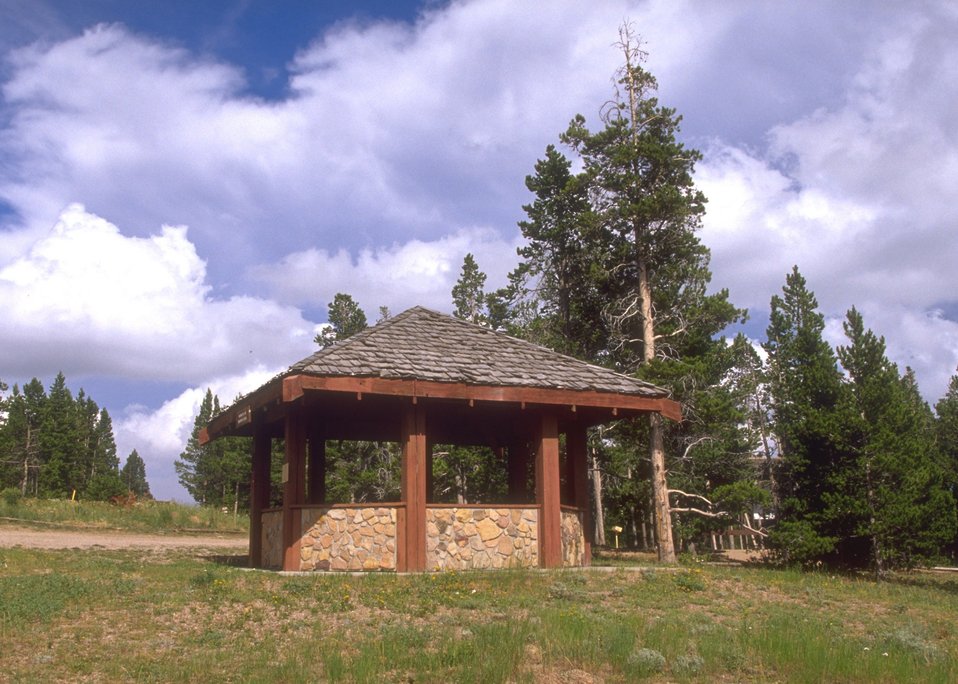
Structure at Muddy Mountain Recreation Area, Casper Field Office.